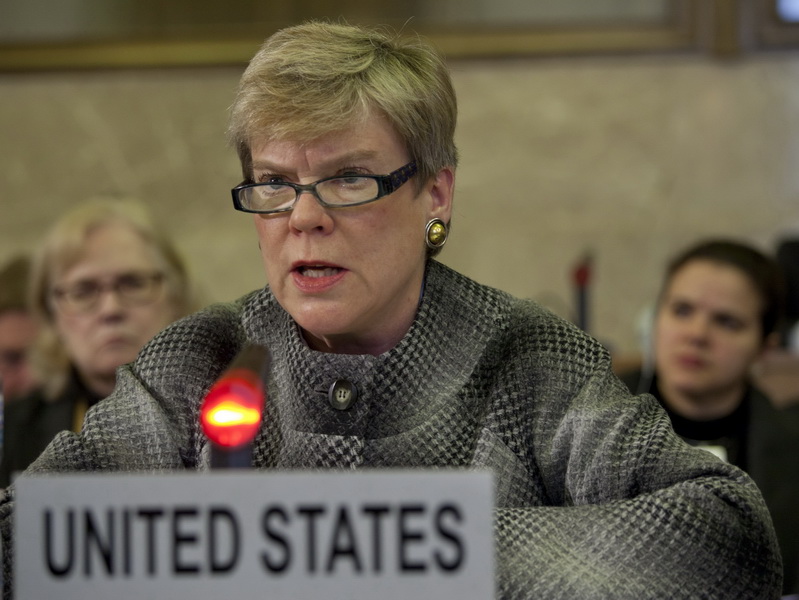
Assistant Secretary Gottemoeller Delivers the Opening Statement

Rose E. Gottemoeller, Assistant Secretary of State for Arms Control, Verification and Compliance, delivers the opening statement for the United States at the First Plenary of the 2012 Session of the Conference on Disarmament in Geneva, Switzerland, on January 24, 2012.